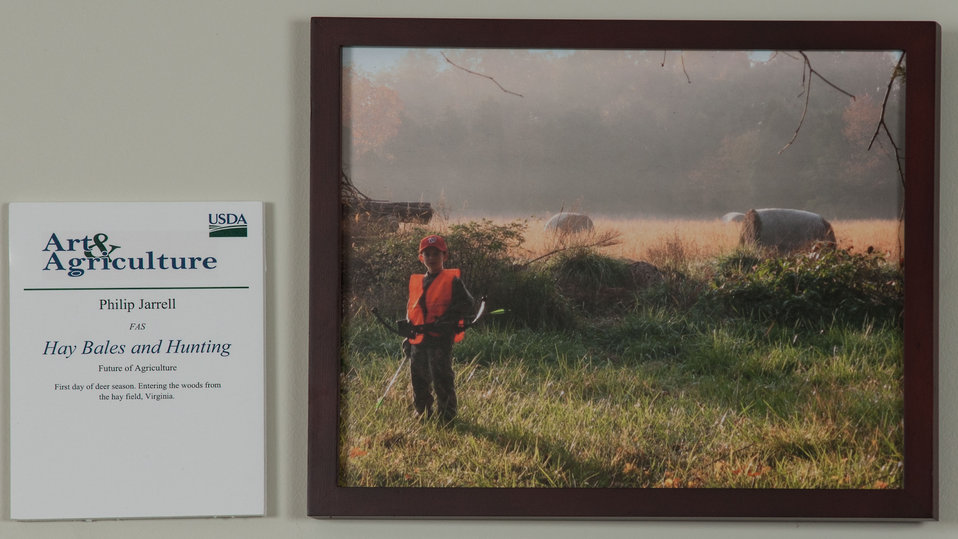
Online Viewer's Choice entries of the 2013 Art & Agriculture, Tuesday, July 9, 2013, in the South Building, Washington, D.C. Themes were expressed by employees from across the department and the contest was open to full-time and part-time USDA employees. Winning artwork will be displayed till the end of the year. U.S. Artistic expression is a creative outlet that is vital for an individual to grow and develop.